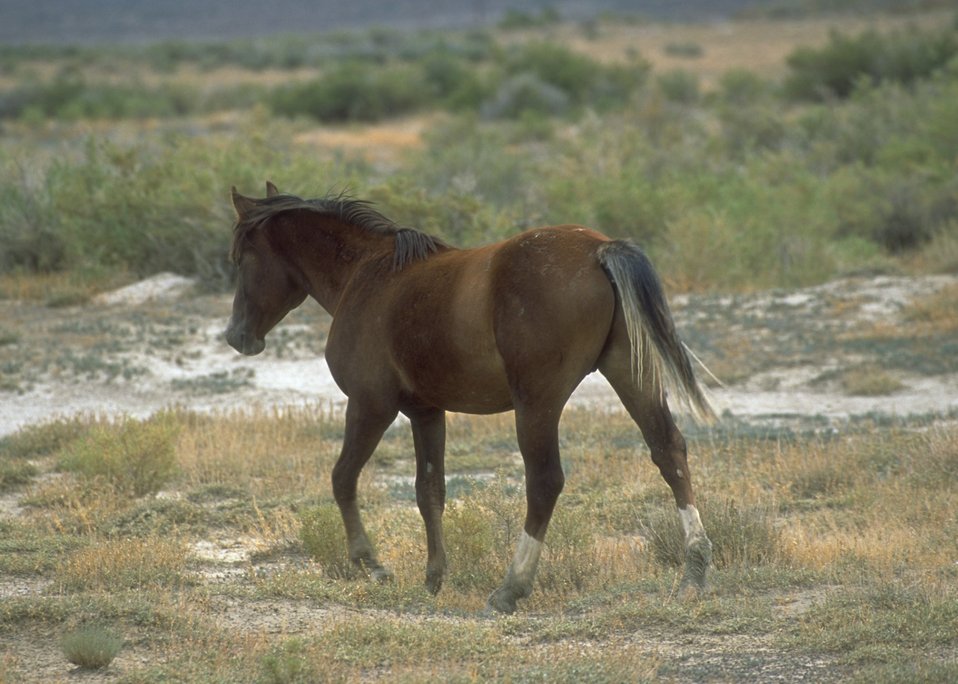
Wild horses, Rock Springs Field Office.